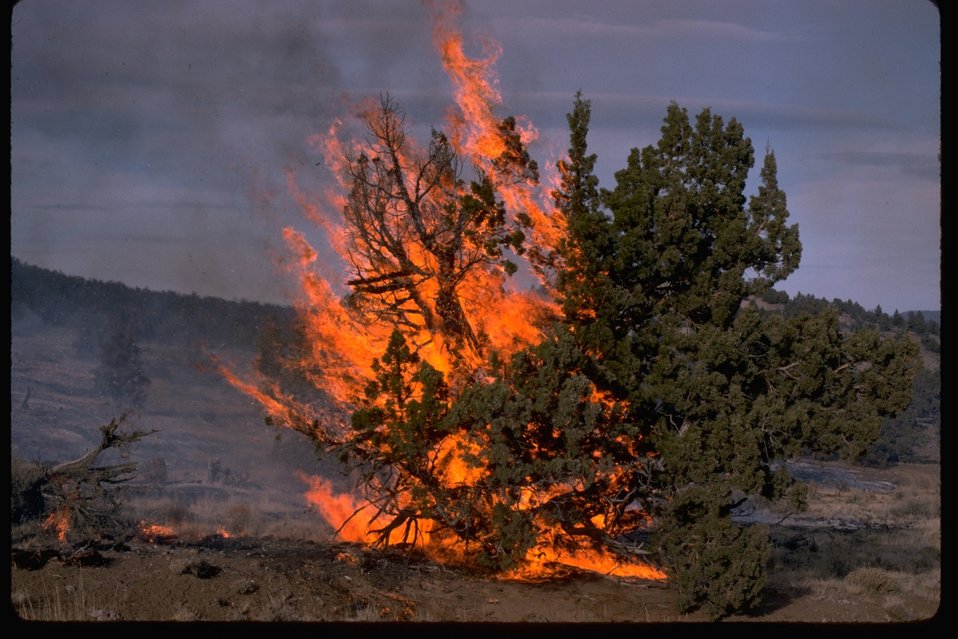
Burning Juniper at Two Springs.